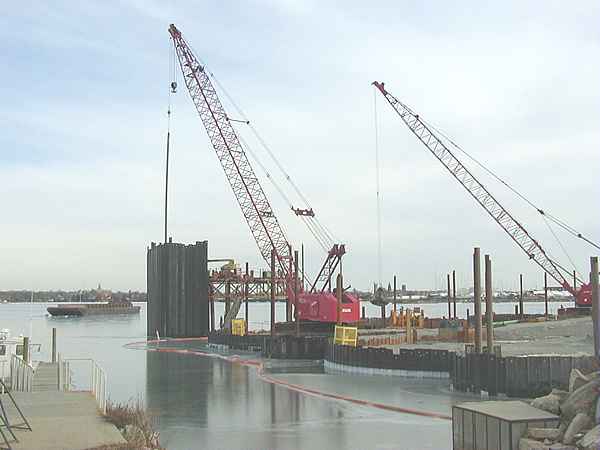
2003, Construction of EPA de-watering cleanup facility

Before dredging and cleanup could begin for the majority of the harbor, EPA had to construct and prepare two facilities along the shoreline that would process and filter the contaminated sediment.

Further north, at the end of Sawyer Street in New Bedford, EPA constructed a de-sanding facility which sifts out sand and debris from the dredged material. The remaining water and more highly contaminated silt is pumped through a submerged pipeline to the de-watering facility shown here in its early stages of construction.

The completed de-watering facility is located at the intersection of Herman Melville Blvd and Hervey Tichon Ave in New Bedford, Massachusetts.

This bulkhead, under constuction in this photo, was built as a platform for operations at the facility.